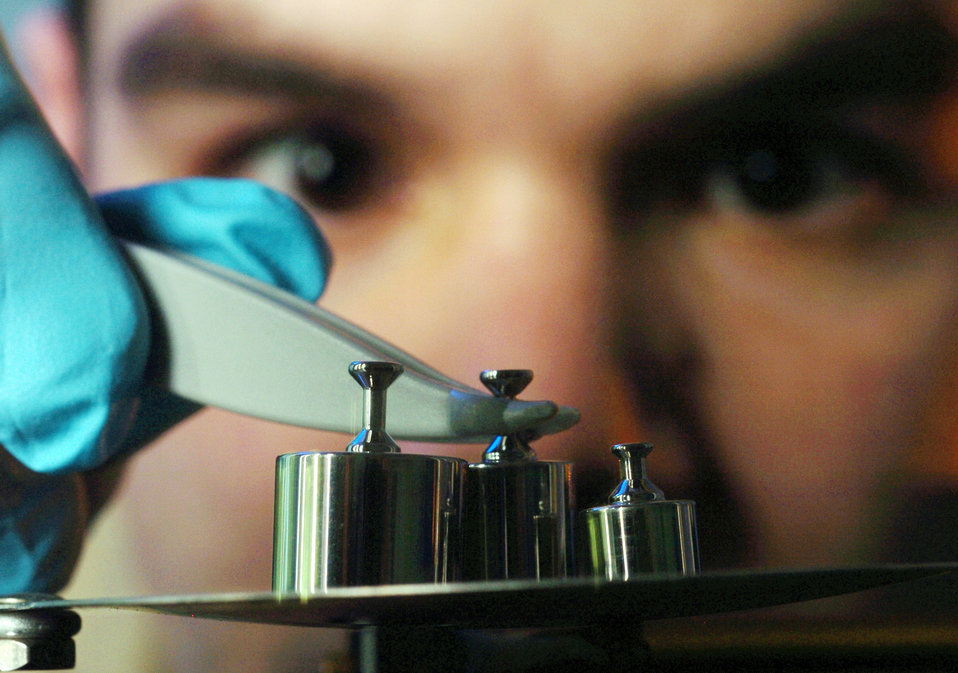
Balanced business

YOKOTA AIR BASE, Japan -- Staff Sgt. Keith Malloy prepares to measure a standard weight on precision balance equipment during a routine check here. He is a precision measurement equipment laboratory technician assigned to the 374th Maintenance Squadron.